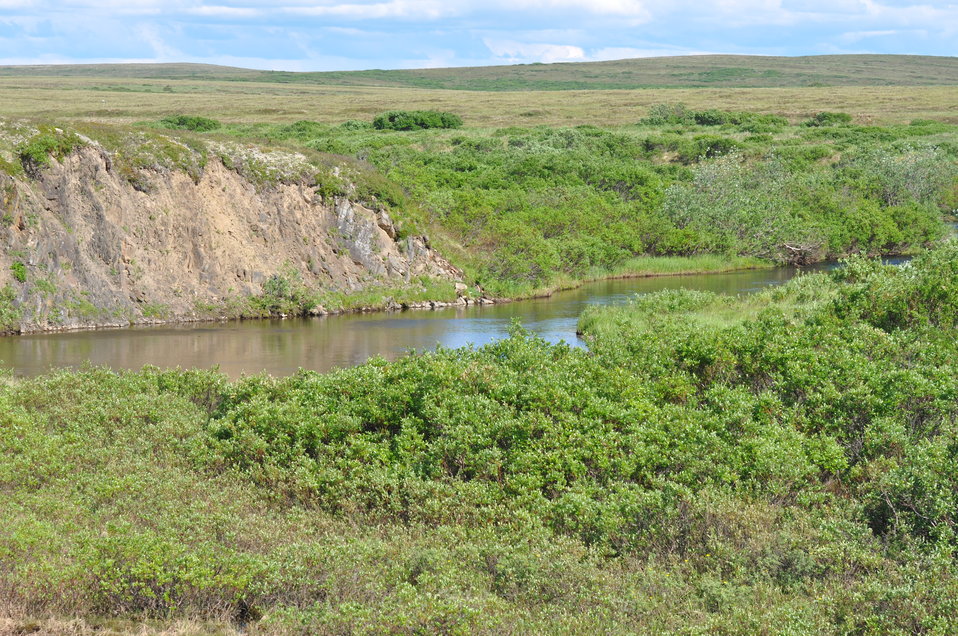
Allen Creek

Andreafsky Wilderness, Yukon Delta National Wildlife Refuge